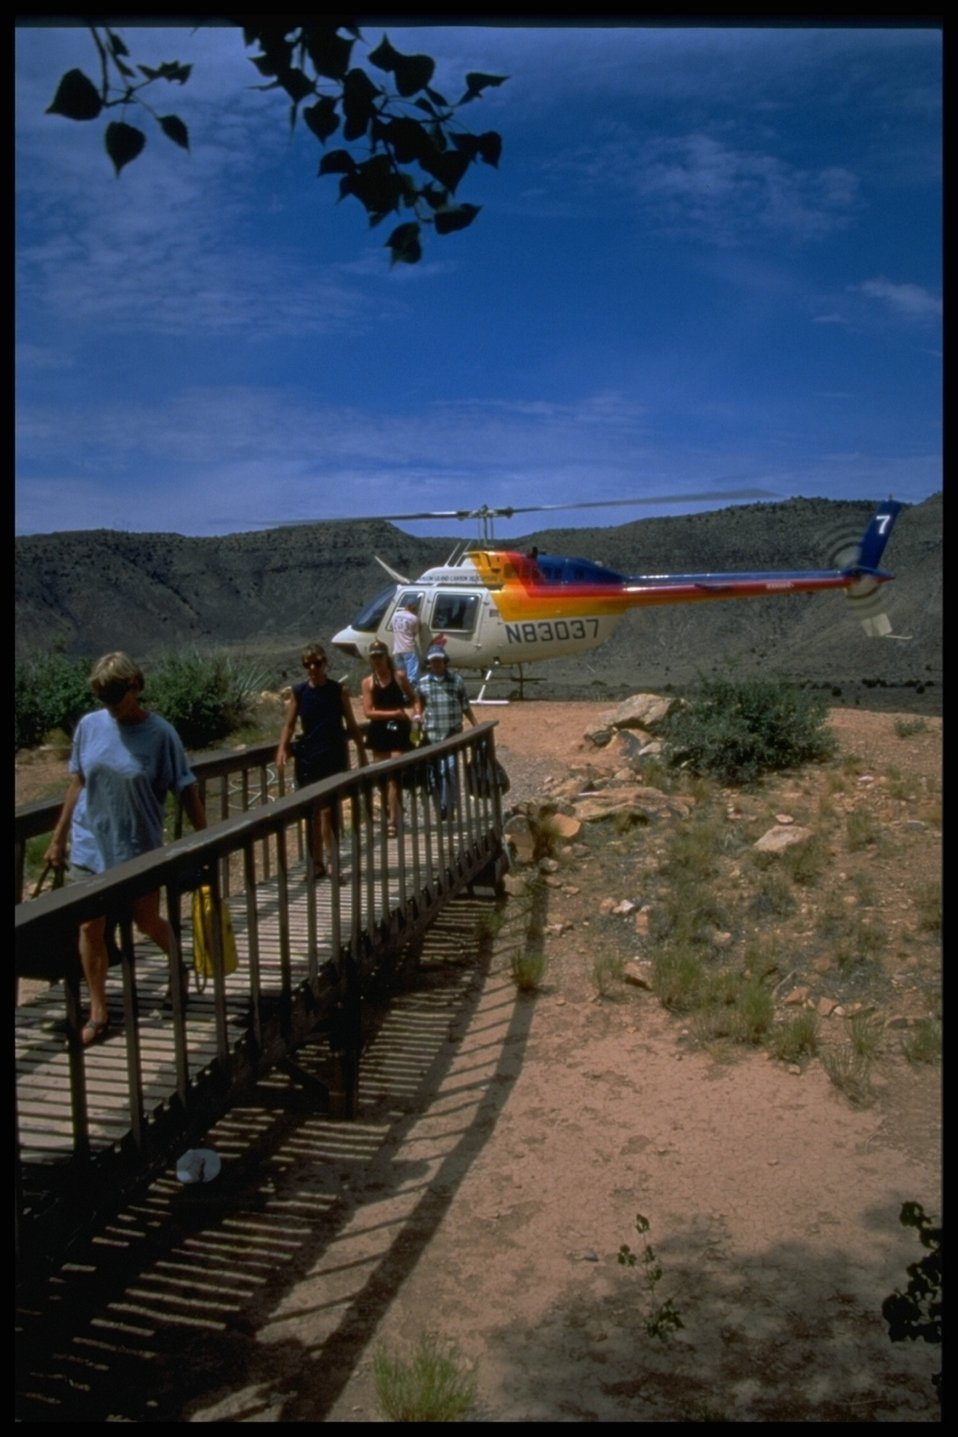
People arriving in the Grand Canyon-Parashant National Monument by helicopter.